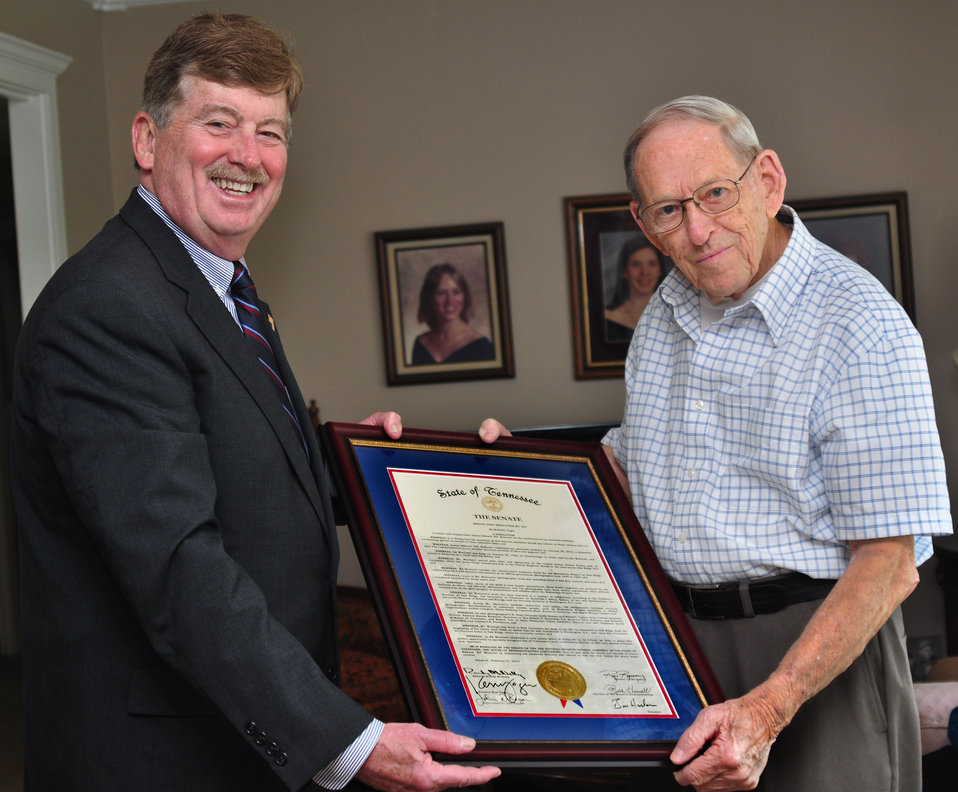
Senator Randy McNally and Ed Westcott AEC photographer

12-067-232 DOE photo by Lynn Freeny

Ed Westcott AEC photographer was given a State Senate Resolution by State Senator Randy McNally honoring his 90th birthday Oak Ridge Tennessee 3-30-2012